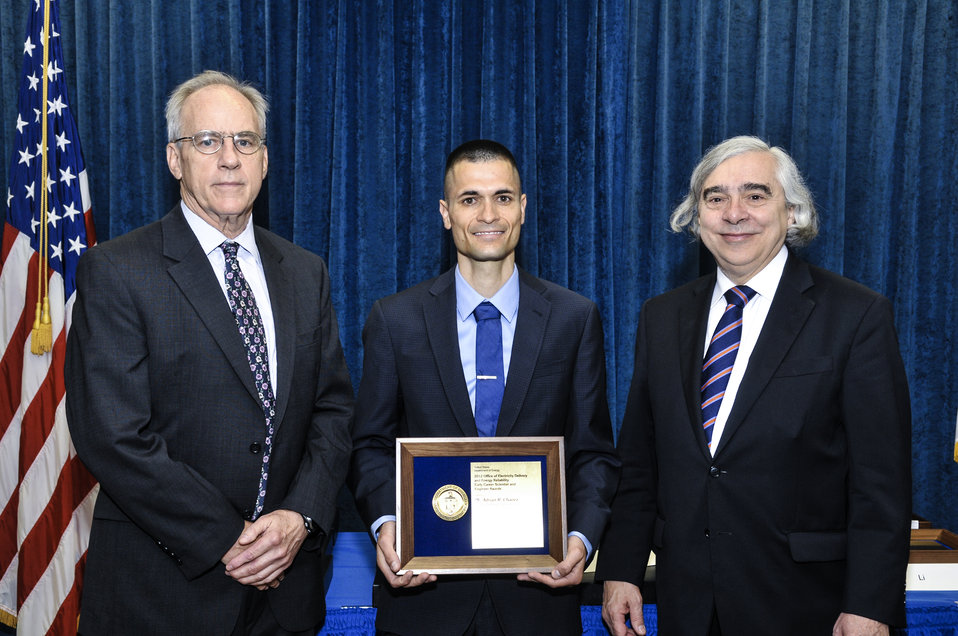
PECASE Awards: DOE Secretary E. Moniz with DOE Office of Electricity Delivery and Energy Reliability Deputy Assistant Secretary Henry Kenchington, PECASE Awardee Adrian Chavez, on April 14, 2014